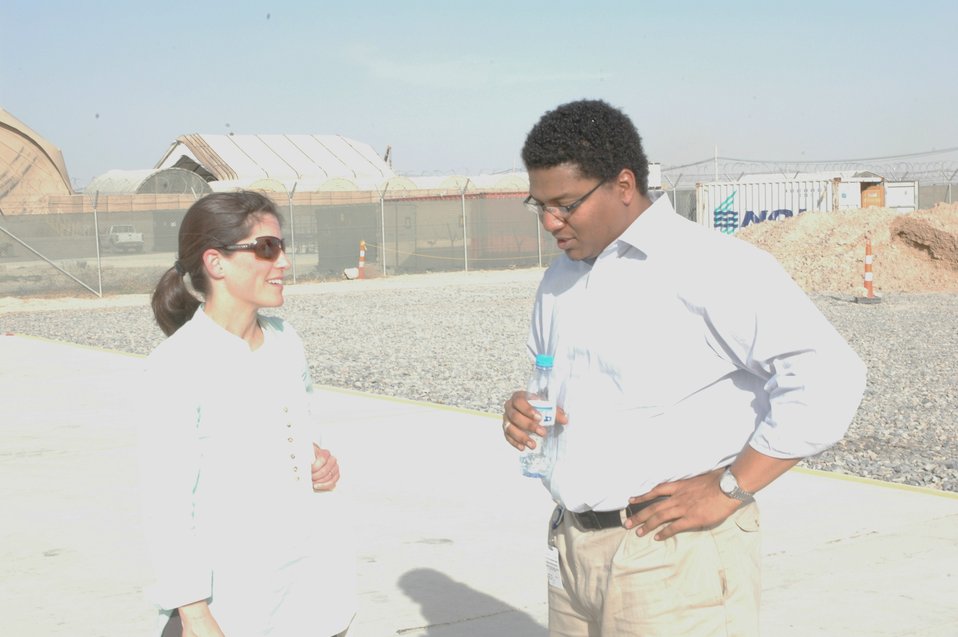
Dr Shah Visits Argandab April 10, 2010